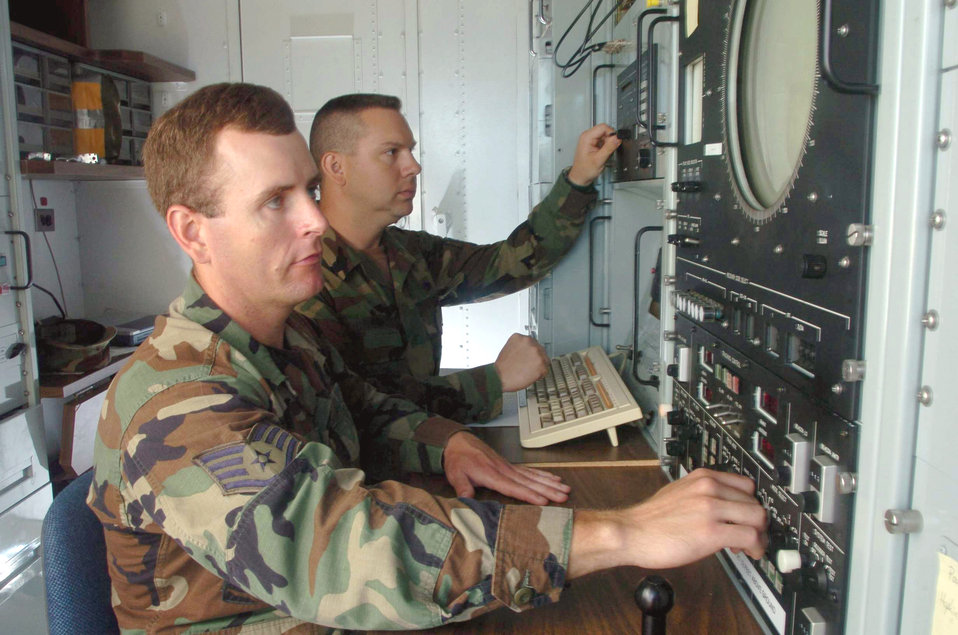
Guard helps train B-52 crews

ANDERSEN AIR FORCE, Guam -- Staff Sgts. Rich Ryan (foreground) and Scott Crain use a Multiple Threat Emitter System to train B-52 Stratofortress aircrews on electronic-warfare techniques. The system is a computer-controlled, multipleemitter system designed to transmit simulated threat signals. Both sergeants are radar maintainers from the 266th Range Squadron at Mountain Home Air Force Base, Idaho.